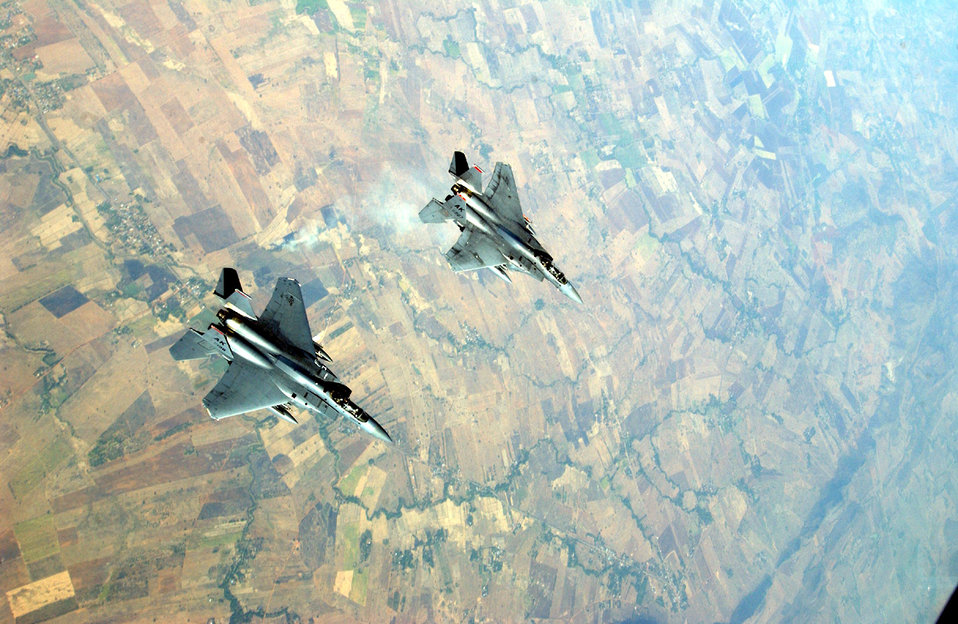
Cope Tiger '04

KORAT ROYAL AIR FORCE BASE, Thailand -- Two F-15E Strike Eagles from the 90th Fighter Squadron at Elmendorf Air Force Base, Alaska, fly in a Cope Tiger '04 exercise mission. Strike Eagles are participating for the first time in the 10-year history of the exercise.